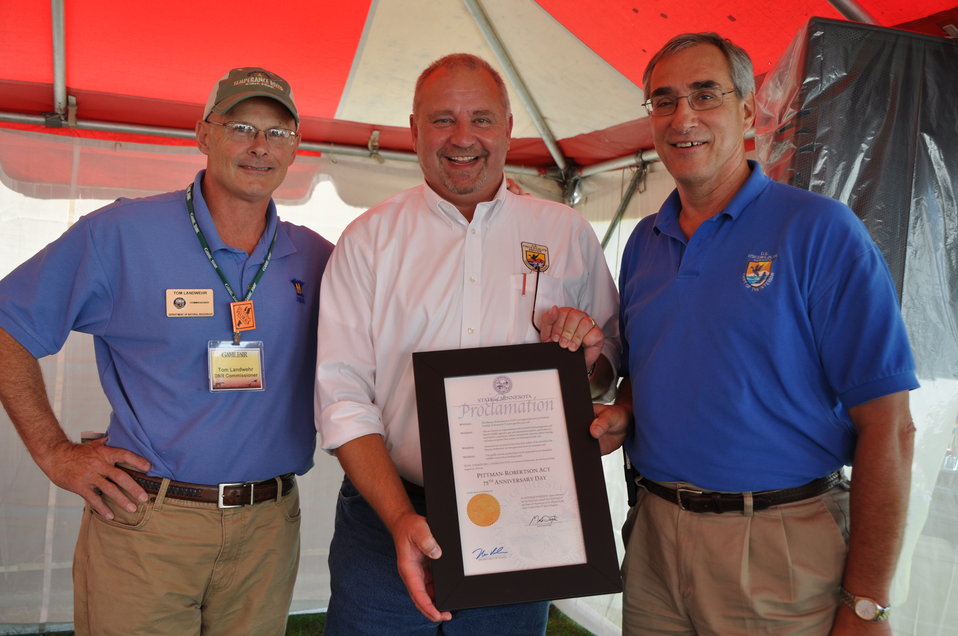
Celebrating Success with Governor Dayton's Proclamation

Minnesota DNR Commissioner Tom Landwehr, WSFR Chief Jim Hodgson, and Service Regional Direcor Tom Melius.